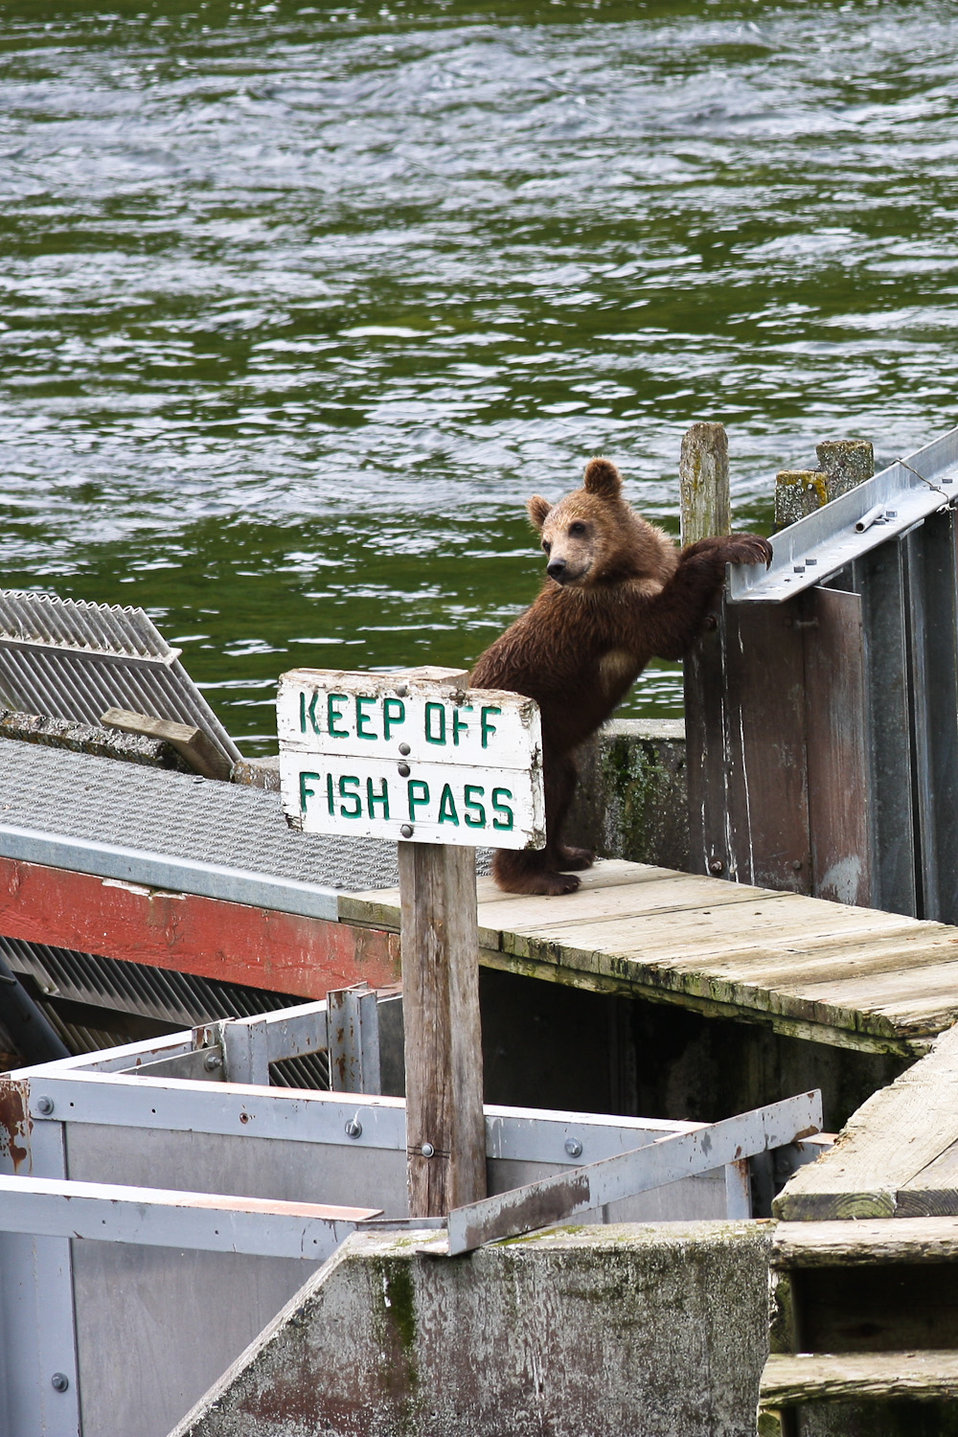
Bear cub breaks the rules.

Kodiak brown bear at Frazer Fish Pass.
Lisa Hupp/USFWS